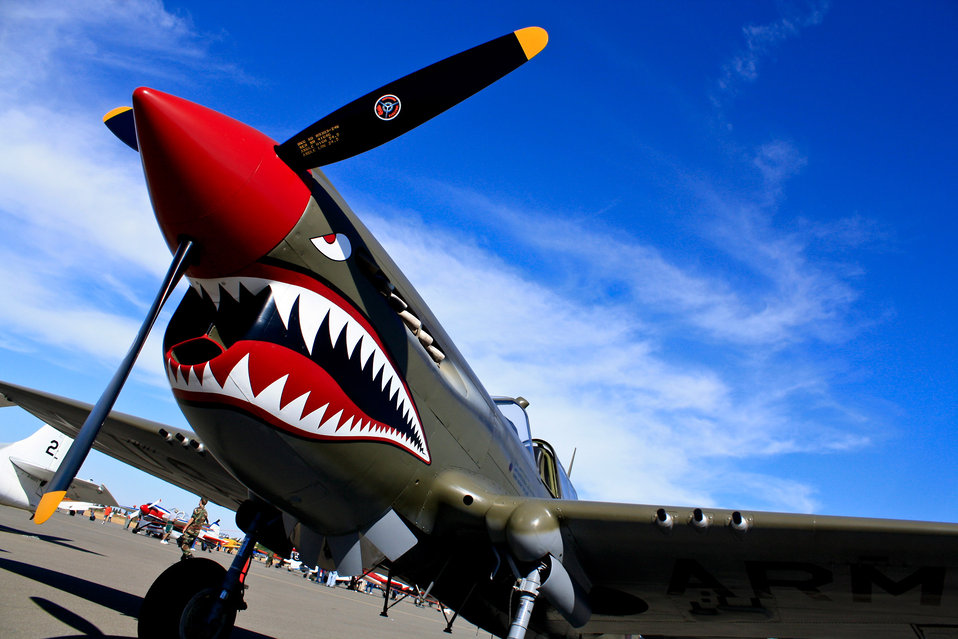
Air show plane

Original image of a decorated p-40e warhawk.